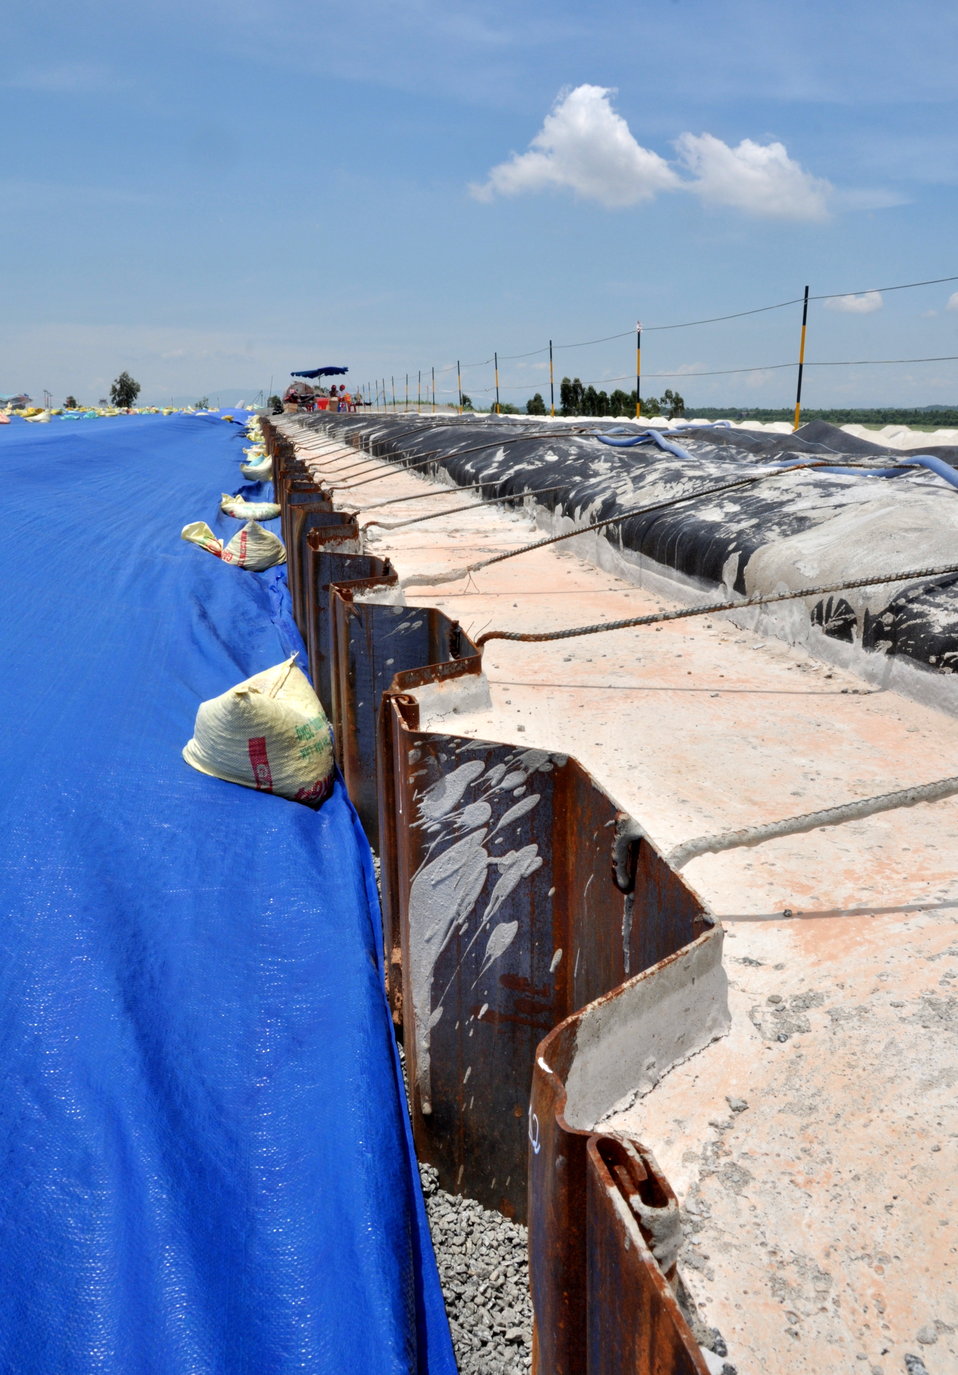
USAID Dioxin Contamination Project Progress: Containment Structure

Progress at the Environmental Remediation of Dioxin Contamination Project at Danang Airport

July 16, 2013